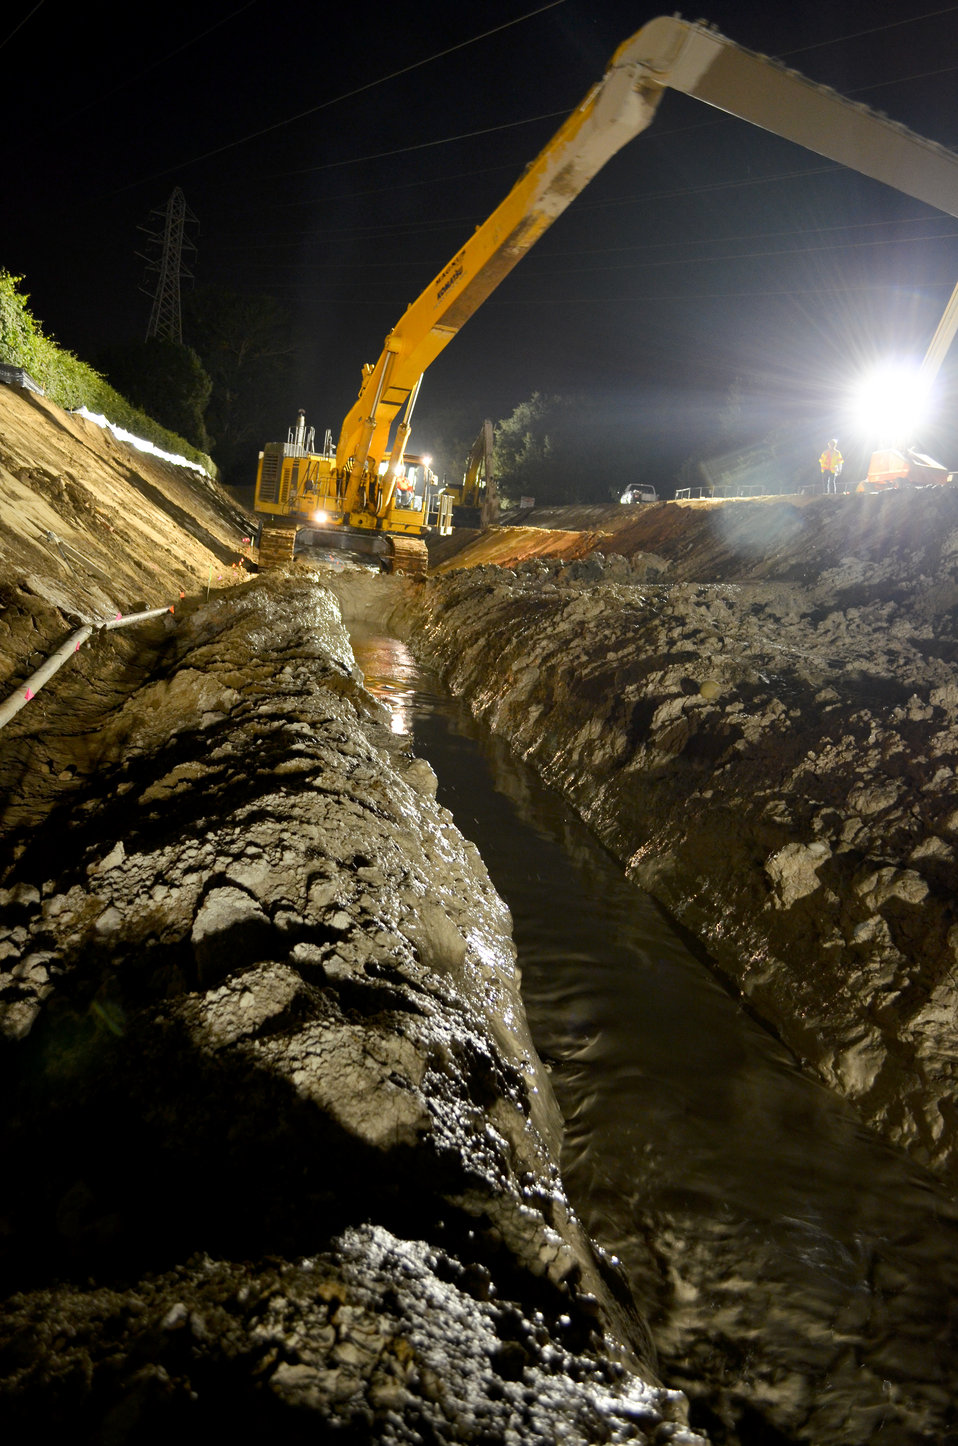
Seepage cutoff wall nighttime construction along the American River

Construction crews work in darkness--when energy demand is lowest--on a stretch of American River levee near the California State University-Sacramento campus Sept. 12, 2012 to close a 900-foot-long gap in a seepage cutoff wall underneath high power lines.
The Corps has built more than 20 miles of seepage walls into American River levees since 2000. Areas where construction was complicated by utilities, bridges or power lines were set aside for later construction.
The project is part of the American River Common Features project, a joint flood risk reduction effort between the Corps, the state’s Central Valley Flood Protection Board/Department of Water Resources and the Sacramento Area Flood Control Agency.